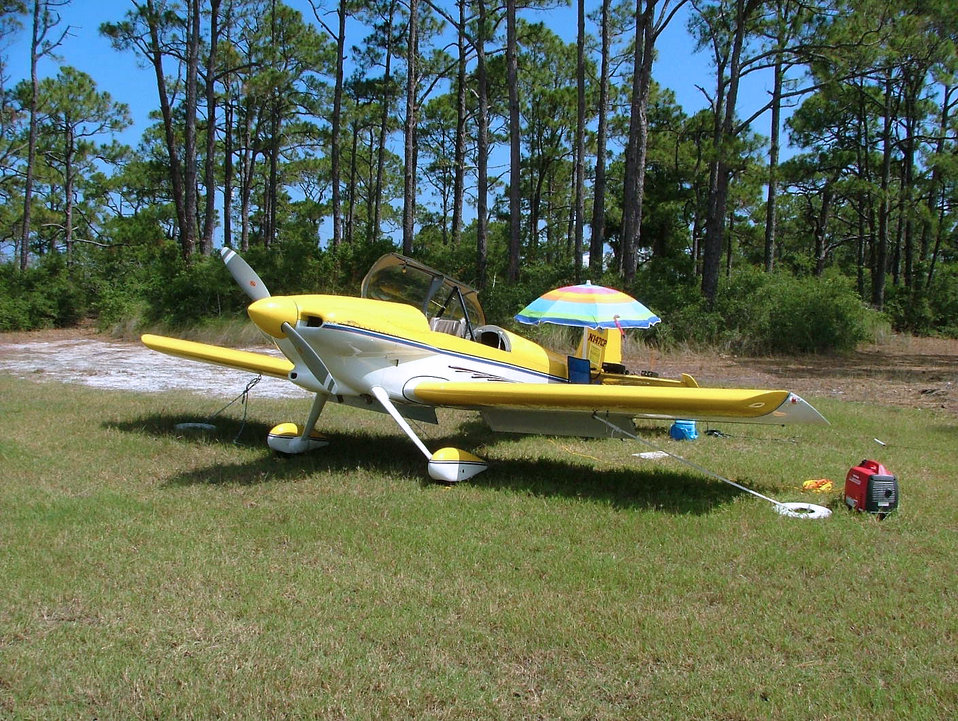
Airman flies to Dog Island to test radio communication

DOG ISLAND, Fla. -- Lt. Col. Edward Linch flew his private plane here during Field Day 2005. The nationwide event is held by the American Radio Relay League to link amateur stations with federal, state and local disaster relief agencies. Colonel Linch established a link to 36 other operators during extremely poor atmospheric conditions. He is the wing plans chief of the 505th Command and Control Wing at nearby Hurlburt Field.